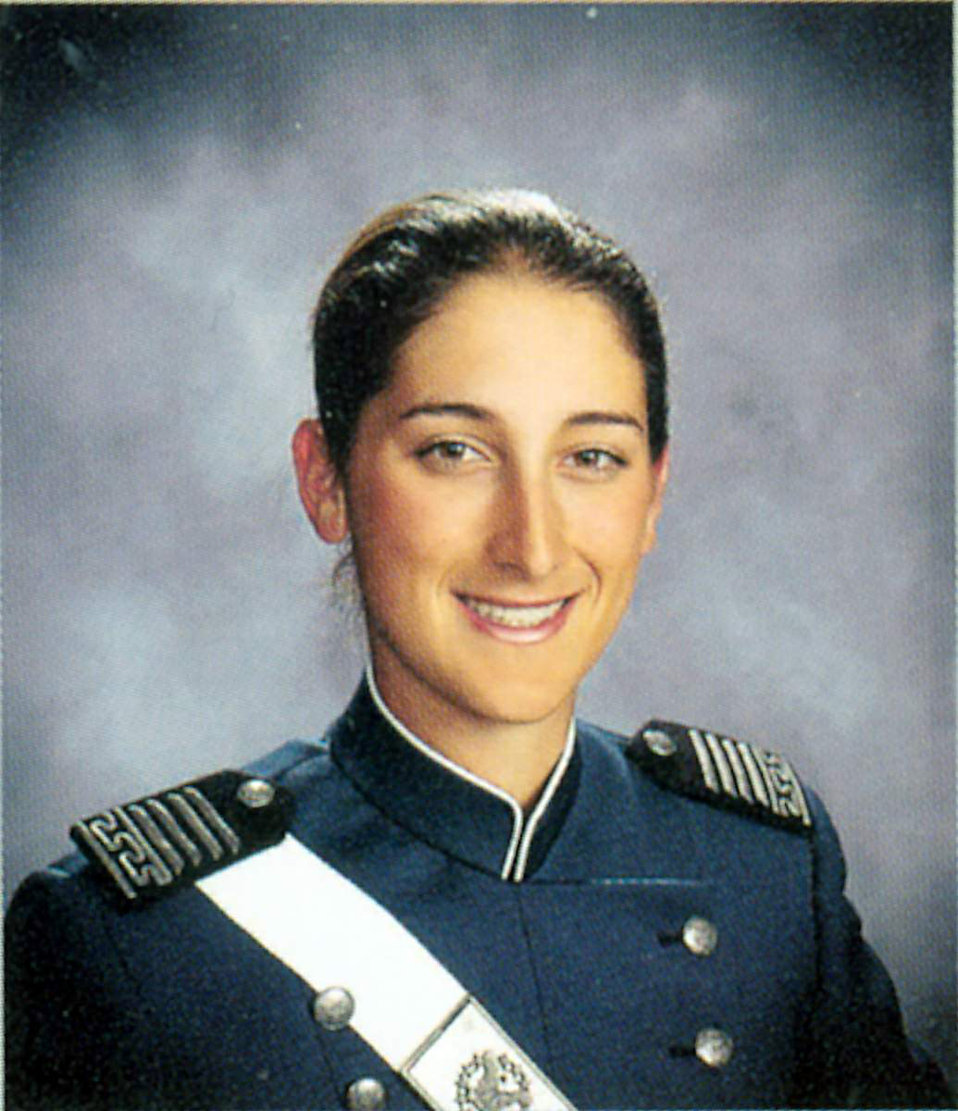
Department of Defense officials identify Air Force casualty

1st Lt. Roslyn L. Schulte, a graduate of the U.S. Air Force Academy, died May 20 near Kabul, Afghanistan, of wounds suffered from an improvised explosive device.